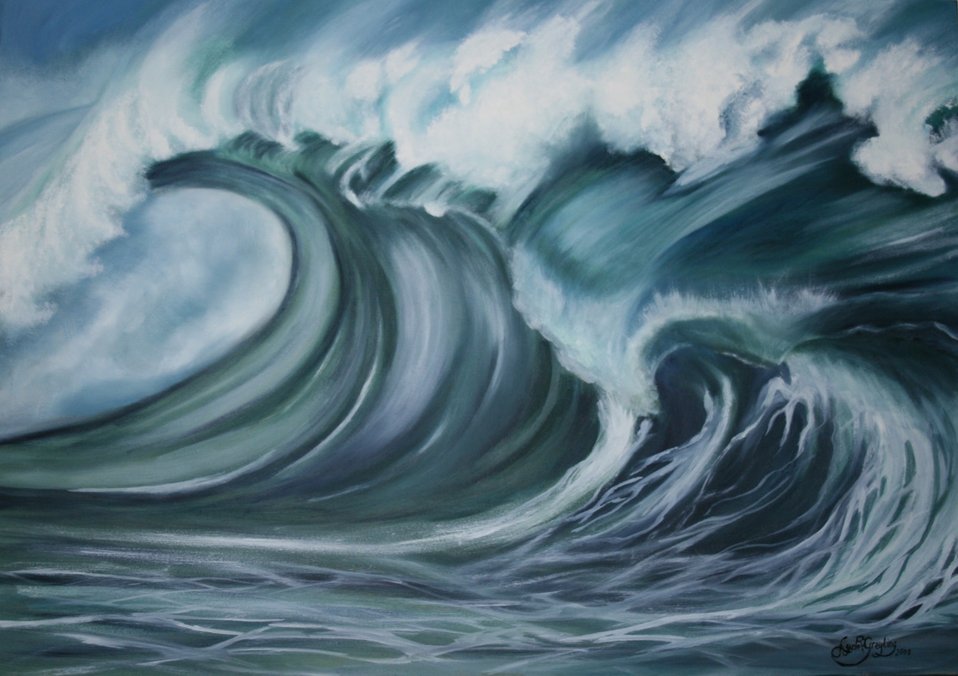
Powerful wave.